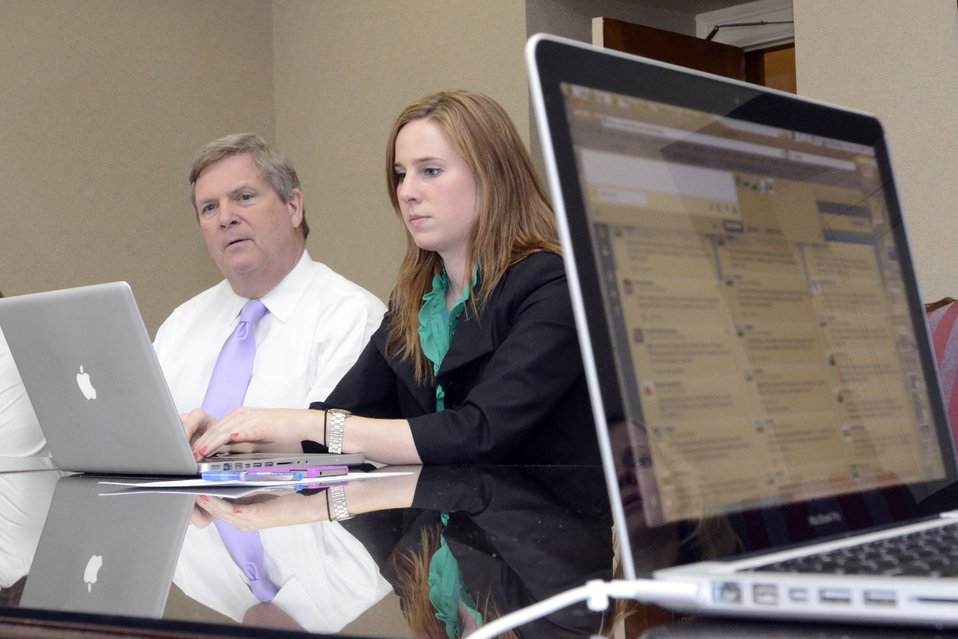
Agriculture Secretary Tom Vilsack responds to questions, with the assistance of Office of Communications Director of Web Communications Amanda Eamich, during the first Virtual Office hours live 'Twitter' session held at the U.S. Department of Agriculture in Washington, D.C., on Thursday, April 4, 2012.